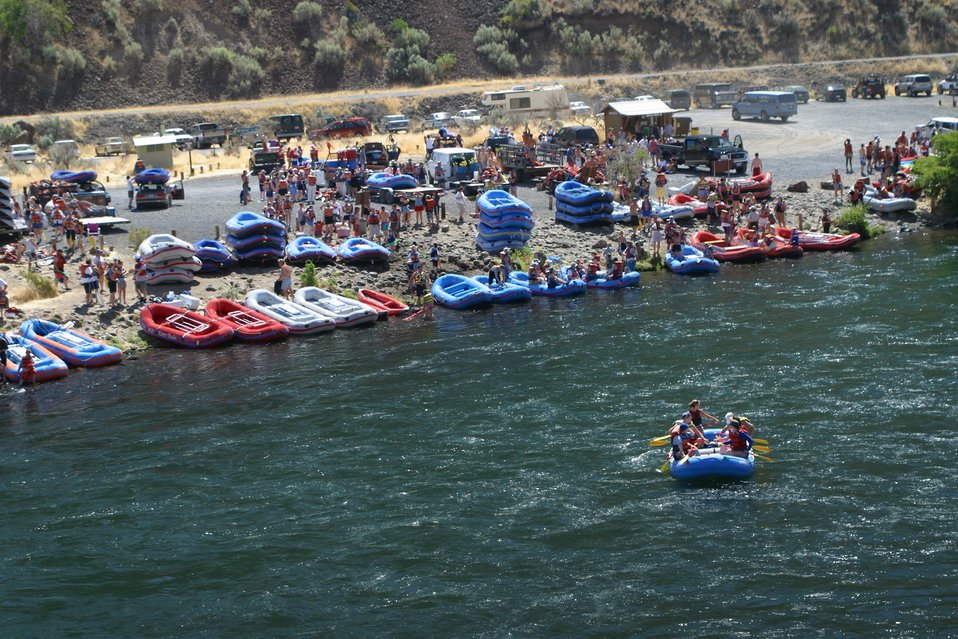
Over 200,000 people a year float the Lower Deshutes River.